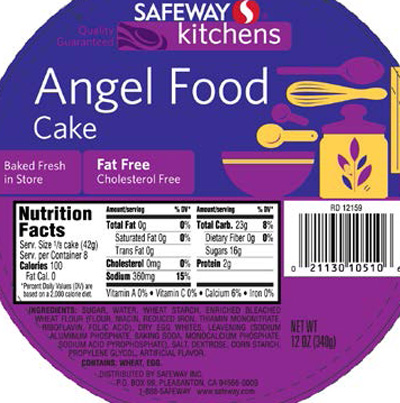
RECALLED – Angel Food Cakes

September 26, 2013 – Product Recall – Safeway Recalls Several Varieties of Angel Food Cake Due to Undeclared Soy and Milk Allergens.